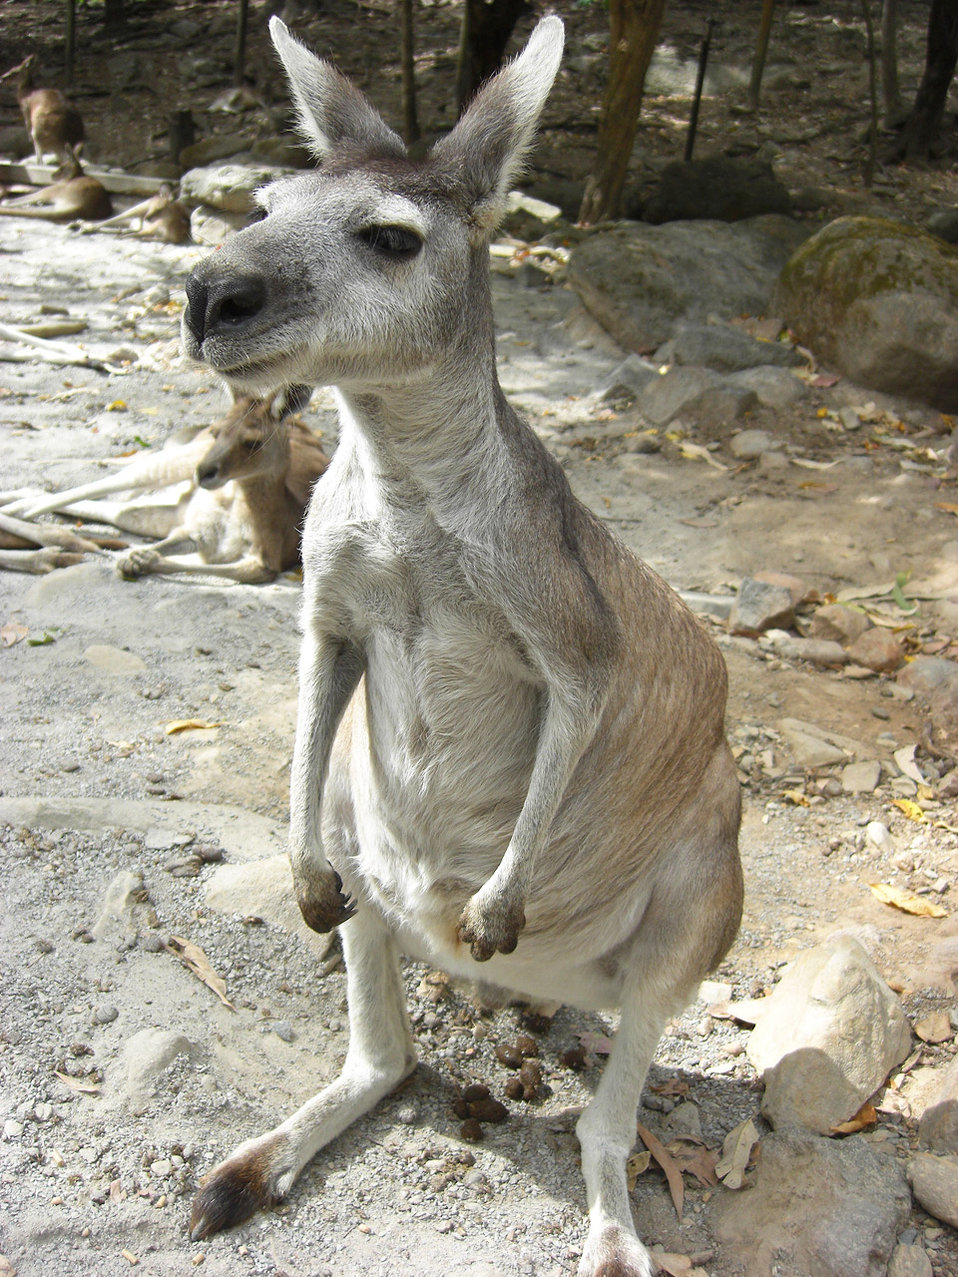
Kangaroo at zoo.